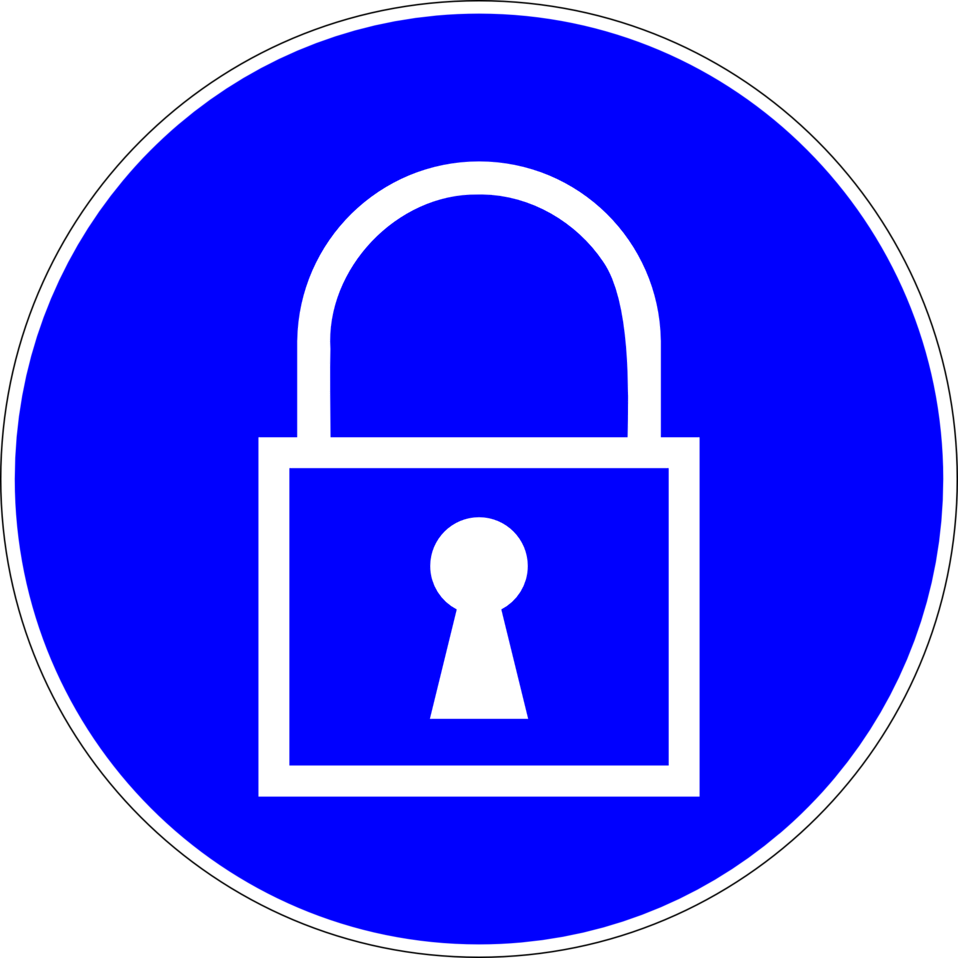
Deutsch: Sperren, Gebotszeichen D-M019 nach DIN 4844-2